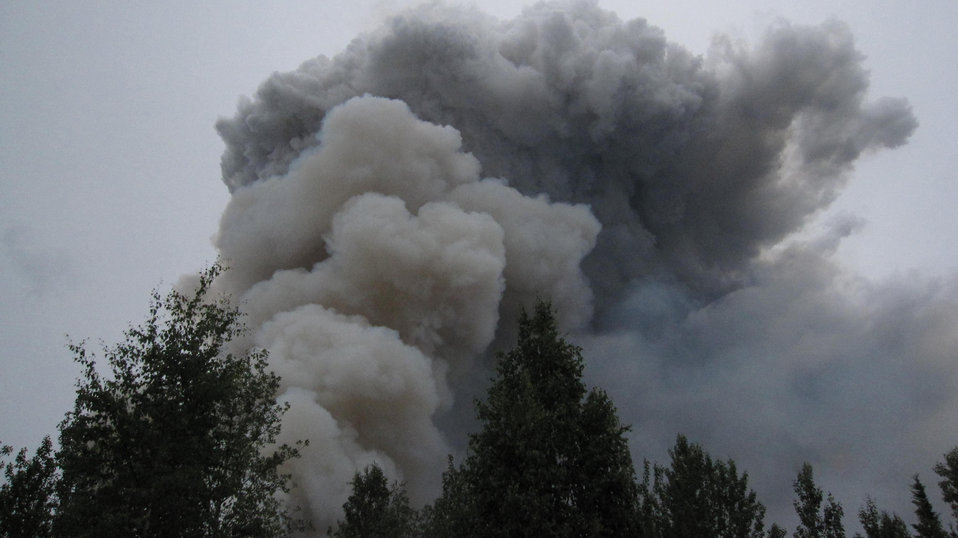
A smoke column rises above the Moon Lake Fire near Humboldt, NV. The Moon Lake Complex Fires consists of 2 fires, Moon Lake Fire and Tetlin Junction Ridge Fire, along the Alaska and Taylor Highways near Tok, AK. Lightning strikes on Jun. 25, 2013 caused the fires, which have consumed over 49, 959 acres.